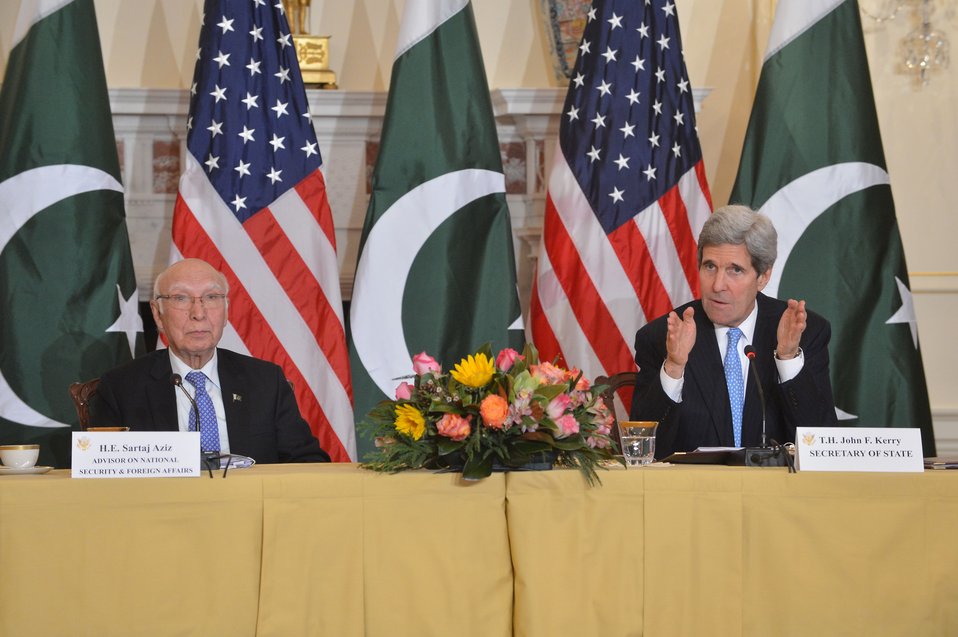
Secretary Kerry and Pakistani National Security and Foreign Affairs Advisor Aziz Participate in the U.S.-Pakistan Strategic Dialogue Plenary Session

U.S. Secretary of State John Kerry and Pakistani National Security and Foreign Affairs Advisor Sartaj Aziz participate in the U.S.-Pakistan Strategic Dialogue Plenary Session at the U.S. Department of State in Washington, D.C., on January 27, 2014.